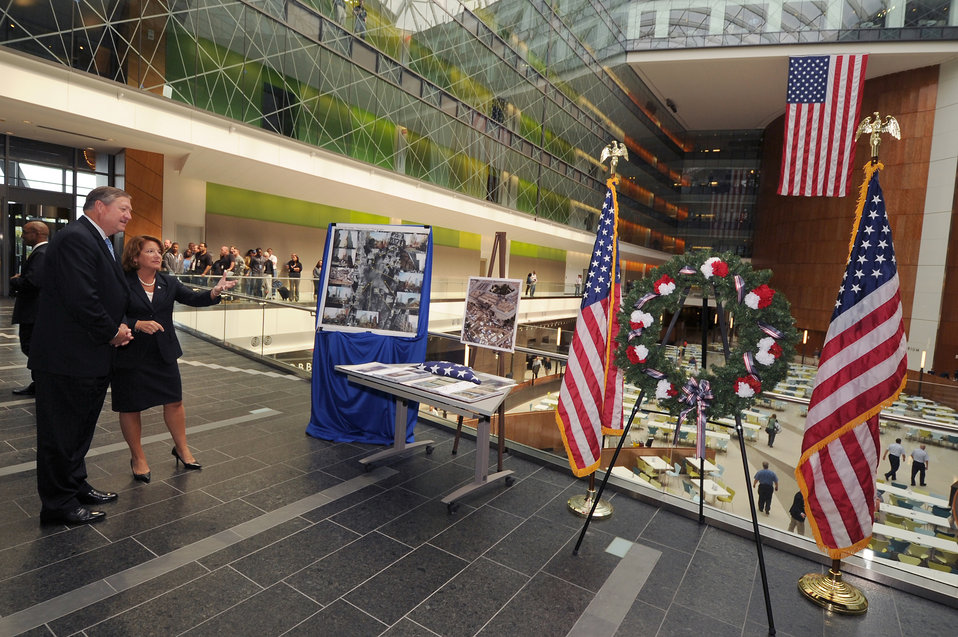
SECAF helps NGA celebrate USAF birthday

Letitia A. Long shows Secretary of the Air Force Michael Donley a tribute to 9/11 in the atrium of National Geospatial-Intelligence Agency’s headquarters Sept. 16, 2011, in Springfield, Va. Long is the , NGA director.